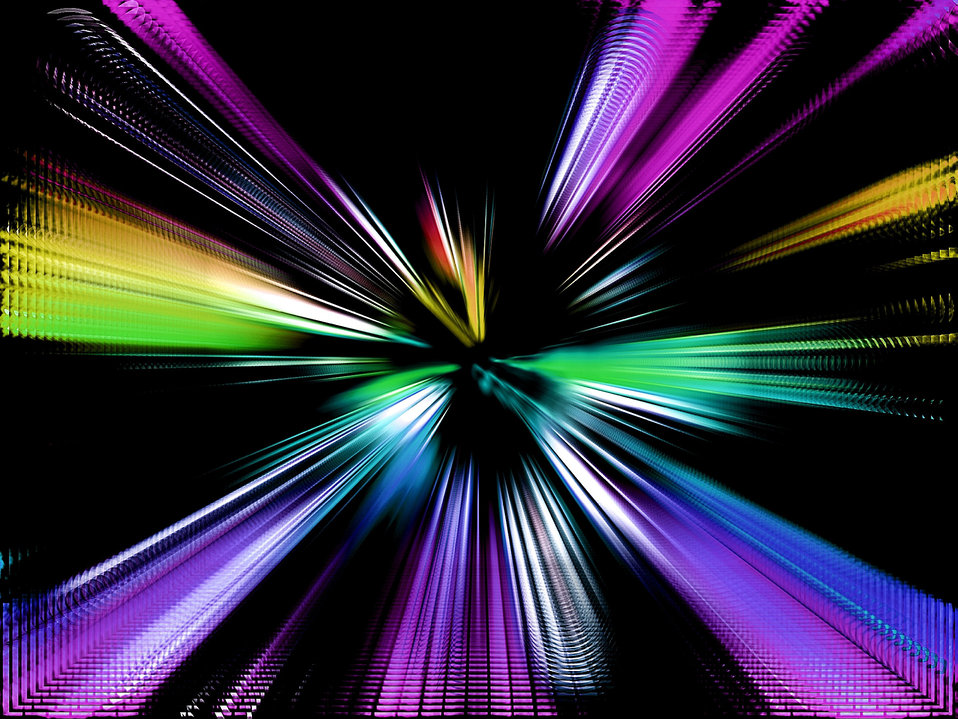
Zoom colored background 2.